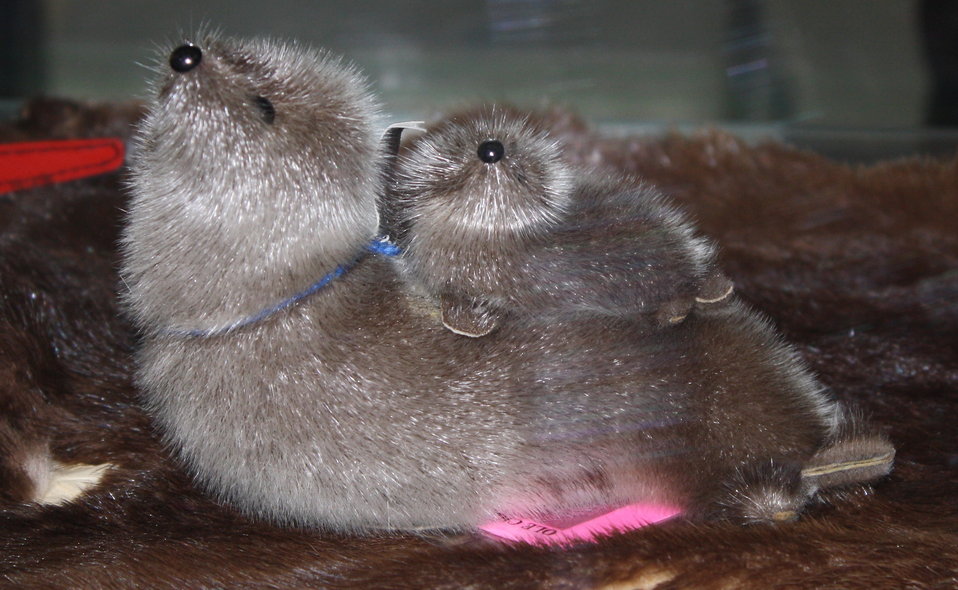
Seal Skin Toy